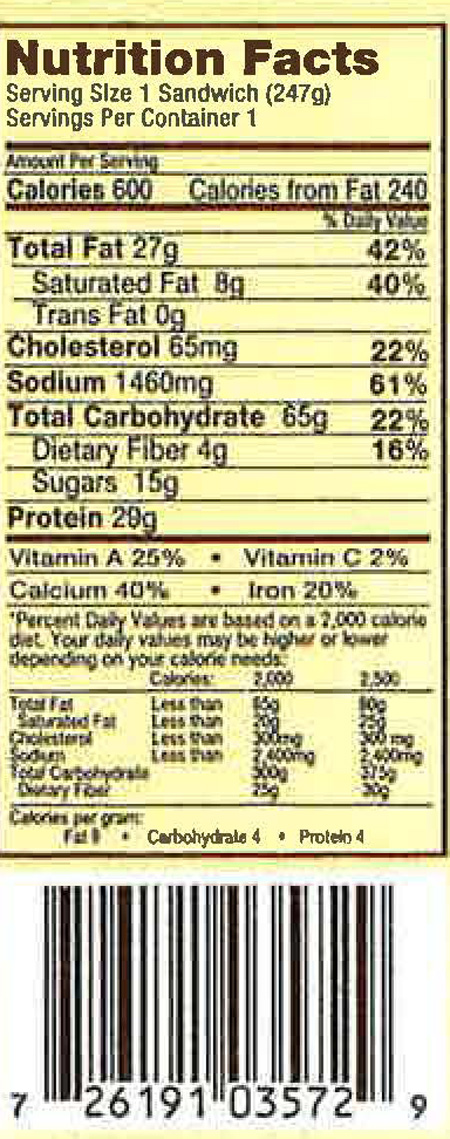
RECALLED - Black Forest Ham and Cheese on a Pretzel Roll

JUNE 21, 2013 – Product Recall – Taylor Farms New Jersey Issues Allergy Alert on Undeclared Tree Nuts in Black Forest Ham and Cheese on a Pretzel Roll with Swiss Cheese and Country Dijon Honey Mustard .